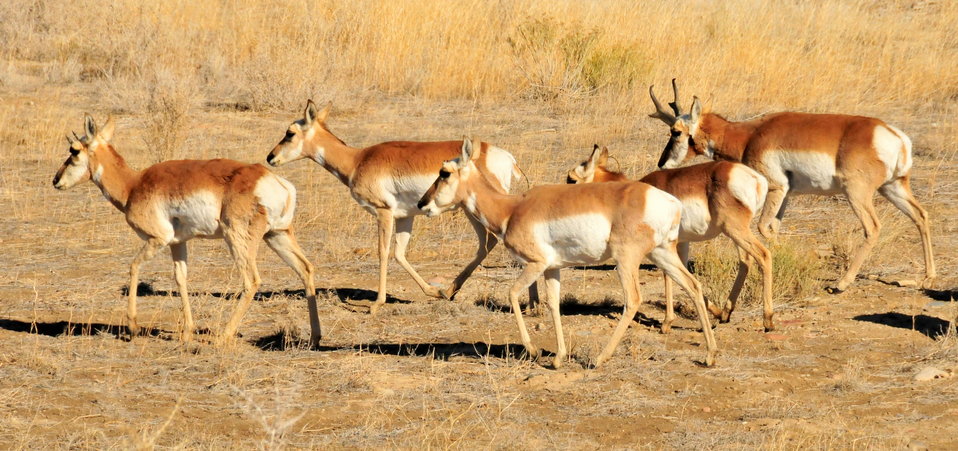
Pronghorns on Seedskadee NWR 1